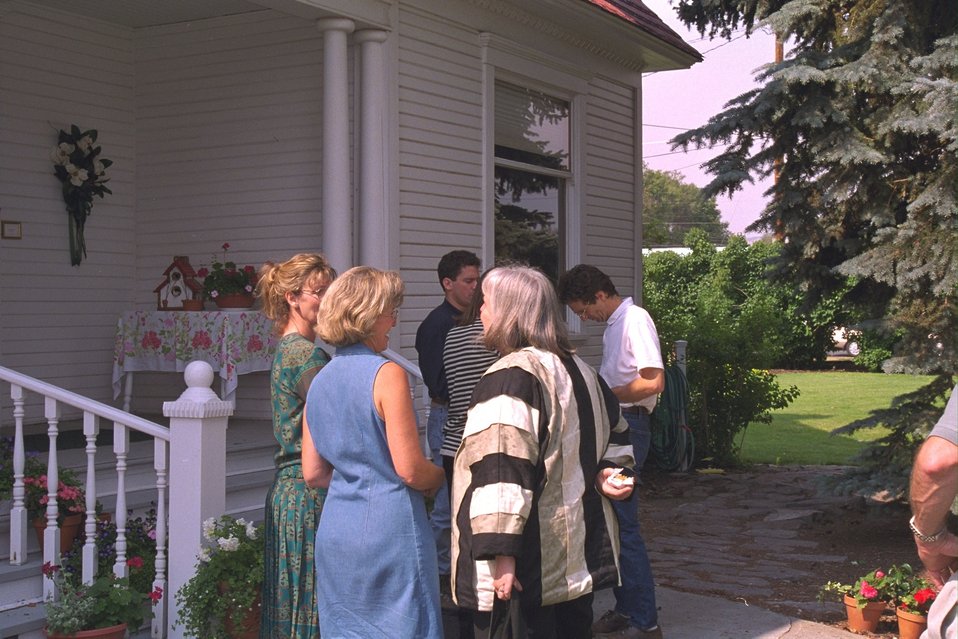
Crowd outside Sage Country Inn meeting with Secretary Babbitt, and with SEORRAC, environmental committees, and the county court.